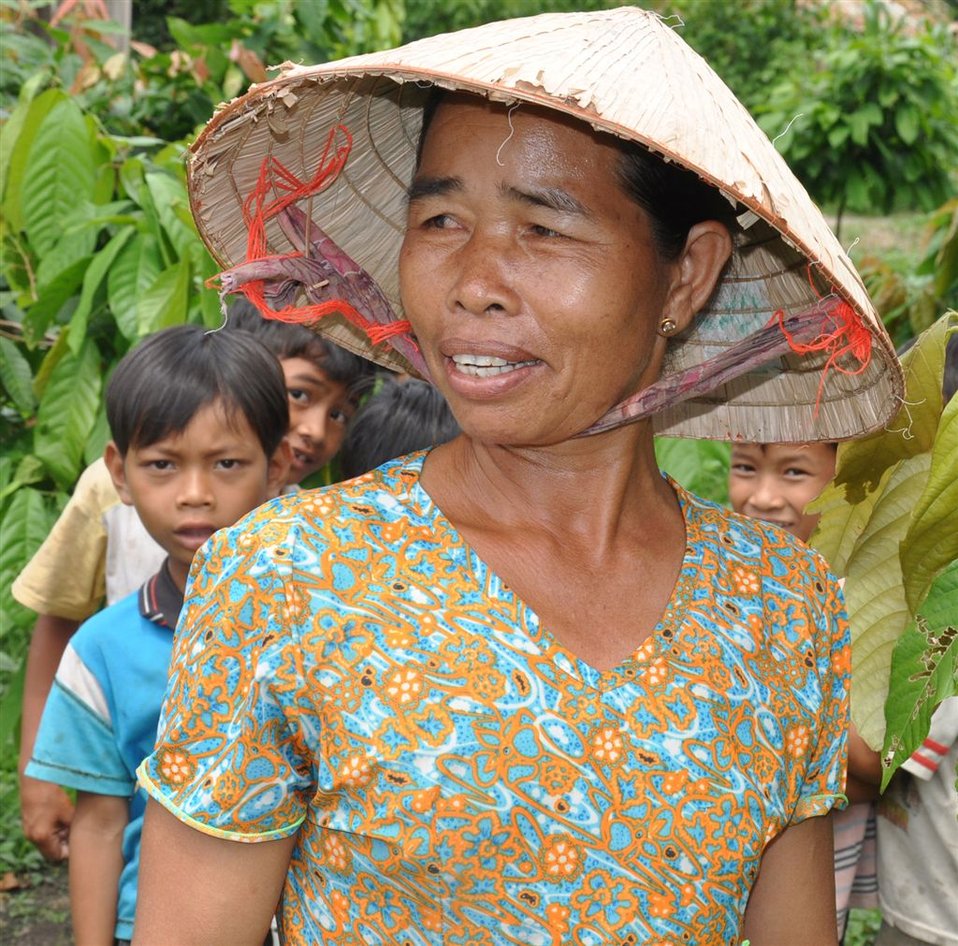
Local populations benefit from new cocoa crop techniques and market access.